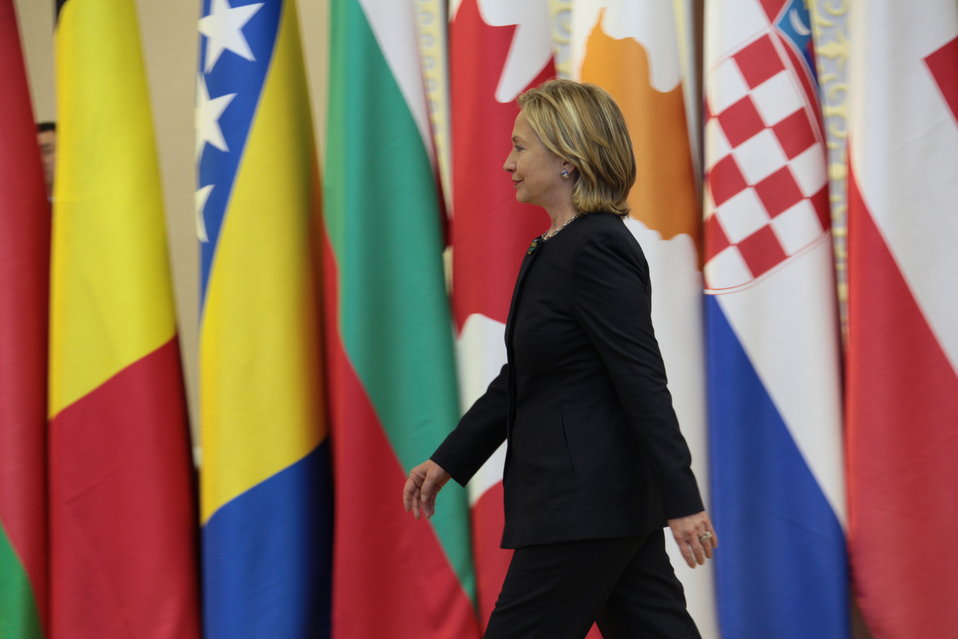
Secretary Clinton Walks in Front of the OSCE Member States Flags

U.S. Secretary of State Hillary Rodham Clinton walks in front of the flags of the OSCE Member States at the 2010 OSCE Summit in Astana, Kazakhstan on December 1, 2010.